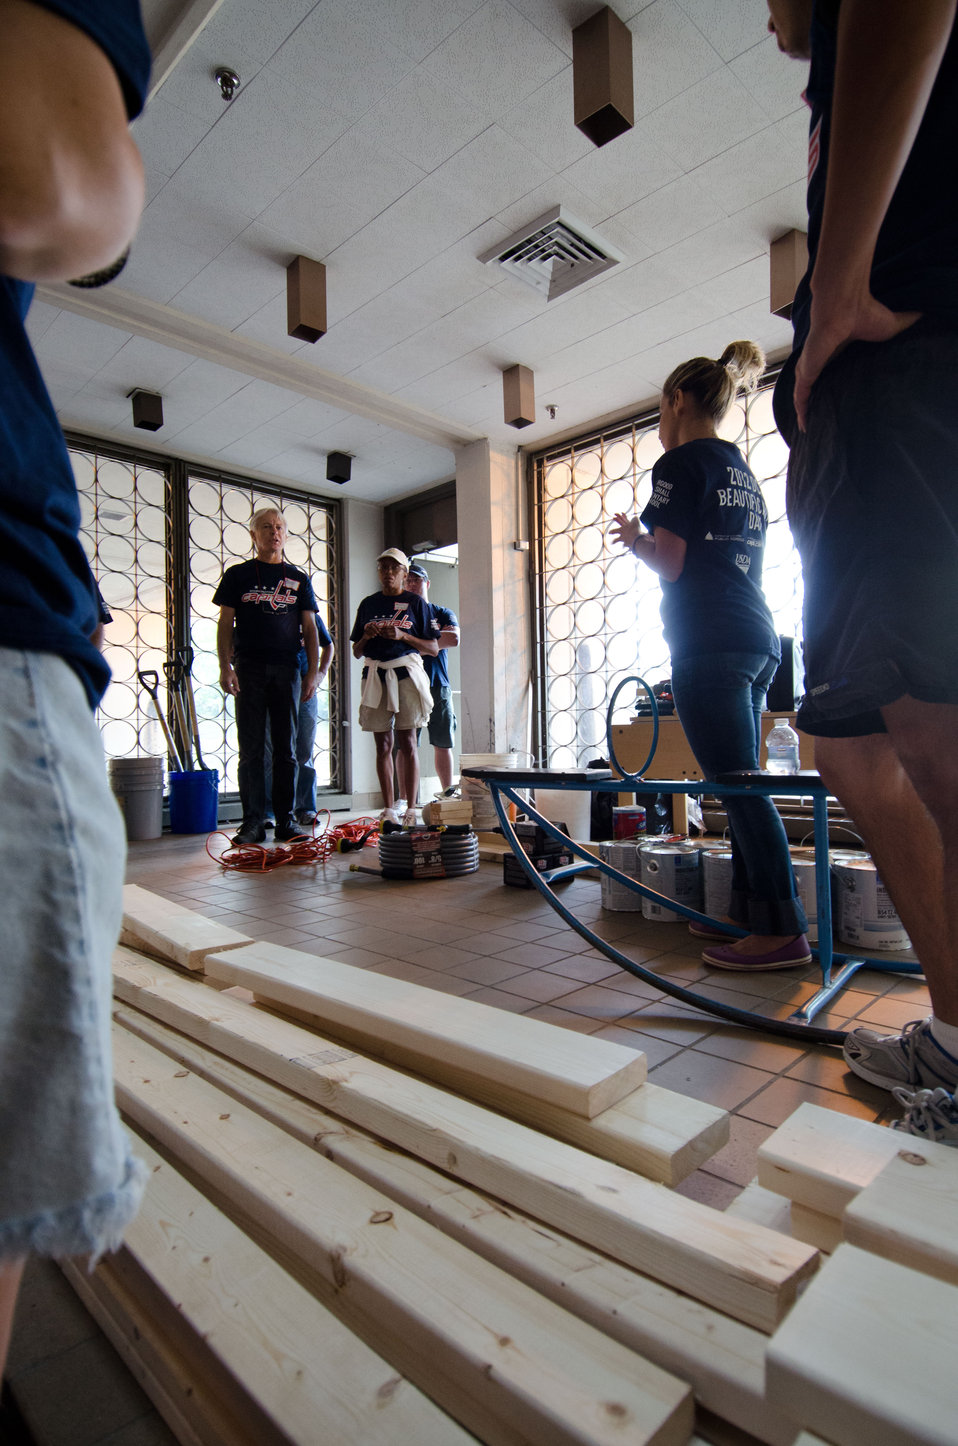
National Landscape Architect Robert Snieckus (left) talks about the raised bed planter build project where U.S. Department of Agriculture (USDA) People’s Garden Executive Master Gardeners, friends, and family, along with Washington Capitals fans are volunteering in District of Columbia Public Schools’ (DCPS) Beautification Day, on Saturday, August 25, 2012, at Thurgood Marshall Elementary School, in Washington, D.C. Each year people are invited to help “spruce up” public school facilities in preparation for the first day of school. More than 70 volunteers pitched in at this large school facility. The People’s Garden effort involves building and painting raised planter boxes, then preparing the soil mixture so they are “ready to grow.” Additionally, a team that includes descendants of U.S. Supreme Court Justice Thurgood Marshall assembles a prefabricated garden toolshed. The Justice’s son, John Marshall leads the team, which includes Brianna the Justice’s great-grand daughter in one of many multi-generational efforts at this school today. Washington Capitals Forward Mike Riberio, his family and mascot Slapshot participated in every project underway at Marshall School. From the outside gardens, to inside murals, and robotics worktable construction, the teams made their goals.